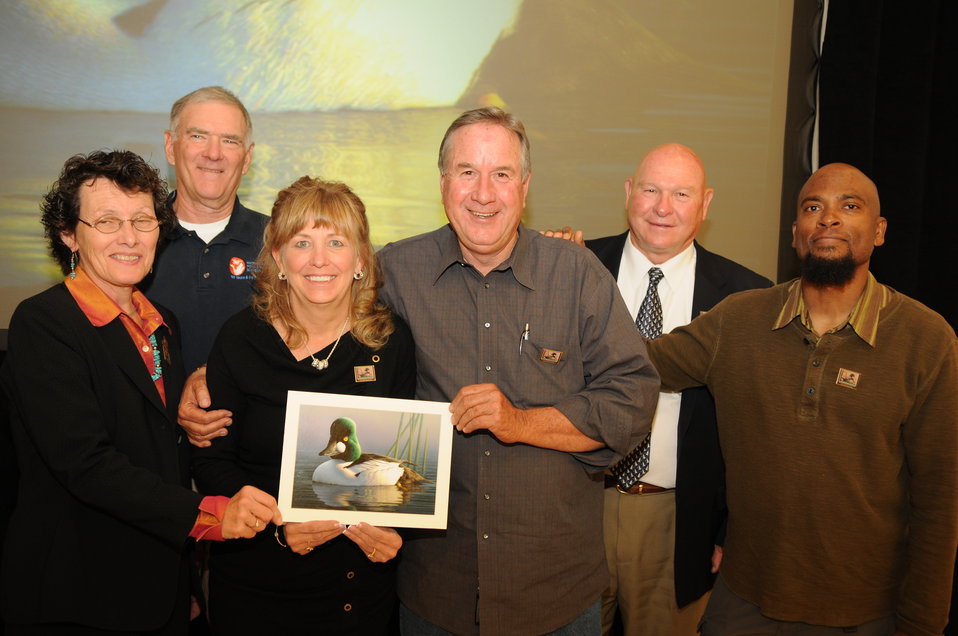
Everyone Loves a Winner

The U.S. Fish & Wildlife Service sponsored the 2012 Federal Duck Stamp Art Contest September 28 and 29 in Ogden, Utah, at Weber State University. A panel of five judges was responsible for choosing the art work used to design the 2013-2014 Migratory Bird Hunting and Conservation Stamp.